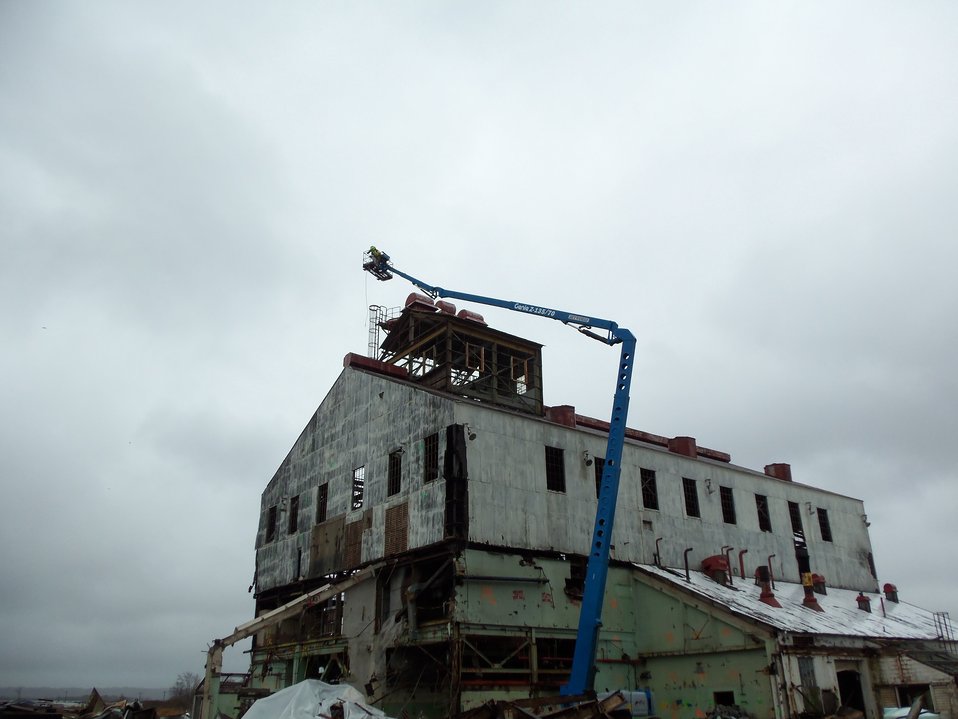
Building 401 asbestos removal and from roof.

Activities from the Niagara Falls Storage Site, which is associated with the former Lake Ontario Ordnance Works. Formerly Utilized Sites Remedial Action Program (FUSRAP), a program initiated in 1974 to identify, investigate and clean up or control sites that were part of the Nation's early atomic energy and weapons program. Activities at the sites that are eligible for FUSRAP were conducted by Manhattan Engineer District (MED) or the Atomic Energy Commission (AEC), both predecessors of the Department of Energy (DOE). The U.S. Army Corps of Engineers was assigned management of FUSRAP by Congress in 1997.